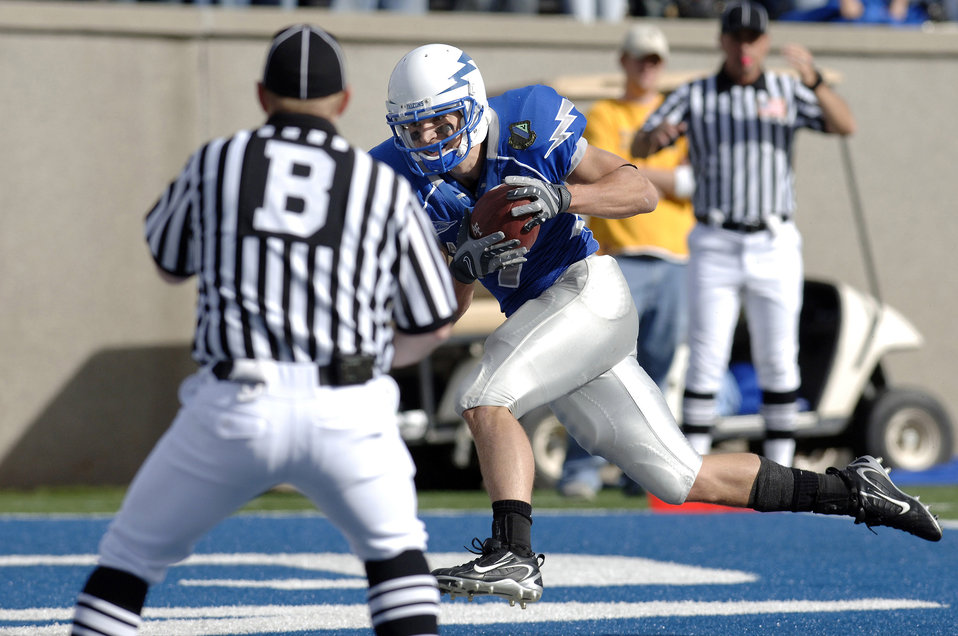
Football: Falcons bowl-eligible after win over Wyoming

U.S. Air Force Academy Falcons wide receiver Mark Root catches a 25-yard touchdown pass in stride in the end zone during Air Force's 20-12 win over Wyoming Oct. 20 at Falcon Stadium in Colorado. Root is one of three Air Force players to catch a pass in all eight games this season.